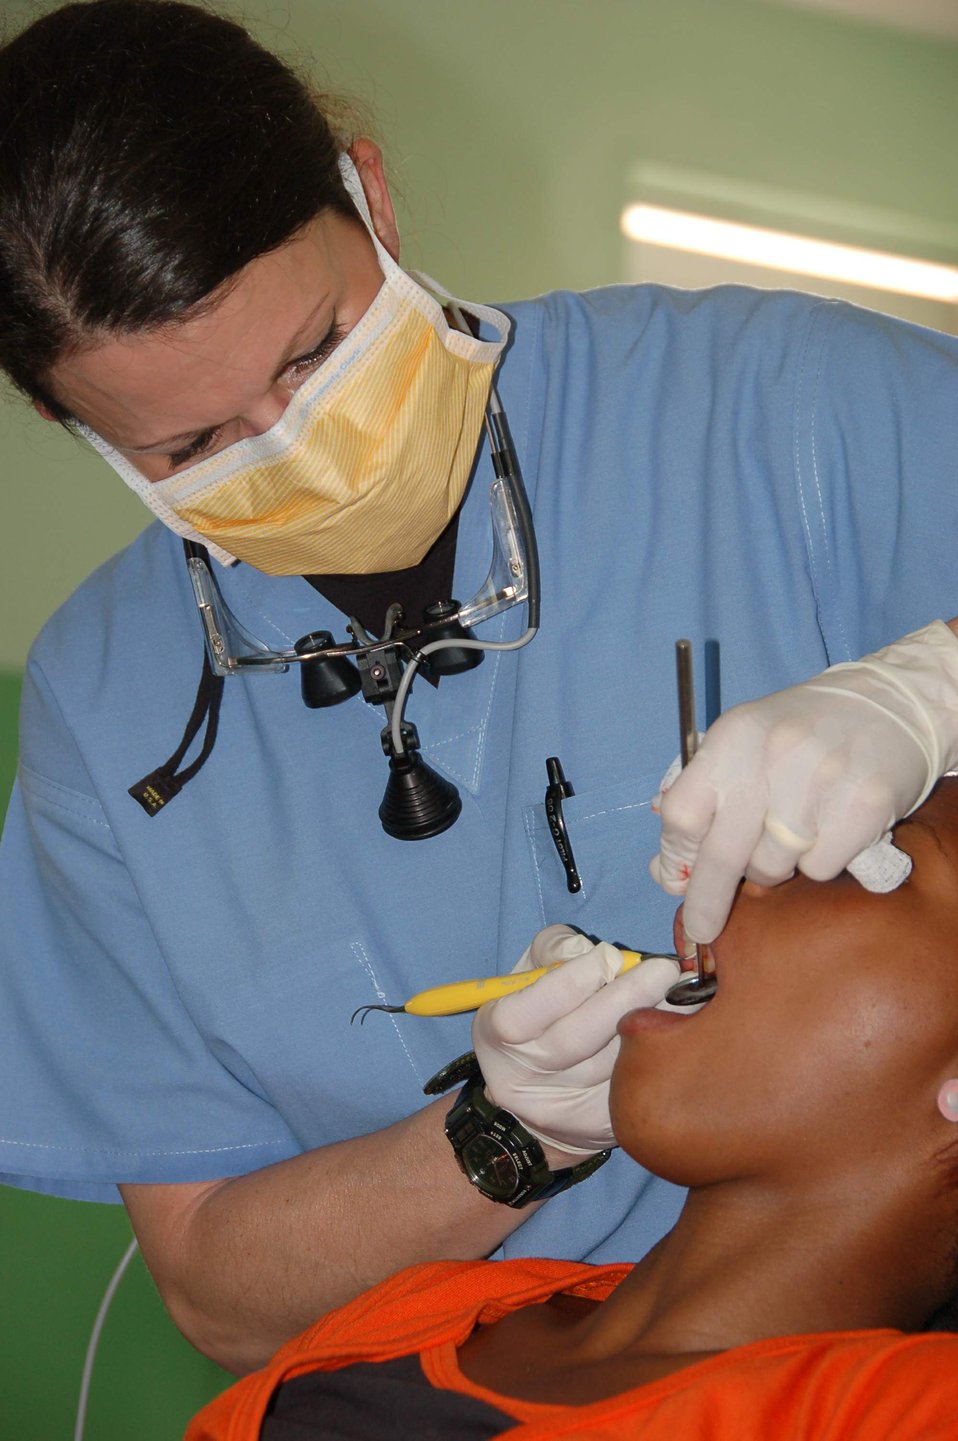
Medics provide care to people in Dominican Republic

Capt. Lora R. Skeahan cleans the teeth of a patient at a primary school turned temporary clinic April 21 in Hostos, Dom. Rep., during the medical readiness exercise, Beyond the Horizon 2009 - Caribbean. The medics treated 1,800 patients during the first two days of the U.S. Southern Command sponsored MEDRETE. Captain Skeahan is a dentist from the 42nd Medical Group at Maxwell Air Force Base, Ala.